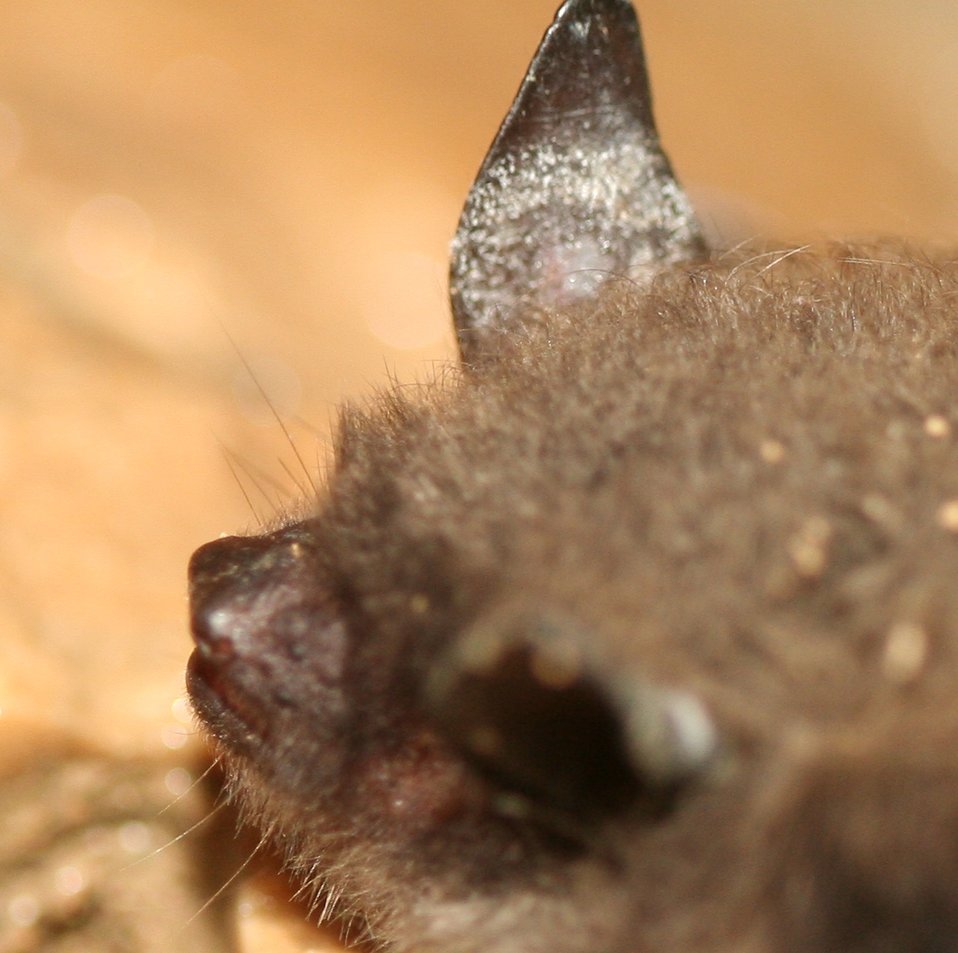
Possible sign of fungal irritation on ear, Canoe Creek, Blair County, Pa.

Credit: Photo courtesy Greg Turner, Pennsylvania Game Commission

Image size: 1057p (3.523) W x 1051p (3.503) H, 300ppi, 655 KB